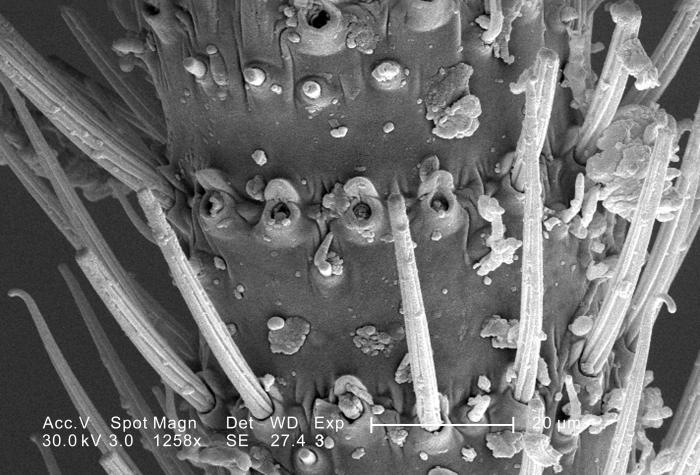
This scanning electron micrograph (SEM) depicted a highly magnified view of a leg of an unidentified green-colored flying insect found outside on the ground in the Decatur, Georgia suburbs; Magnified 1258x. The debris covering the organism is mainly vegetative in nature, composed primarily of pollen granules, and disintegrated plant fibers.